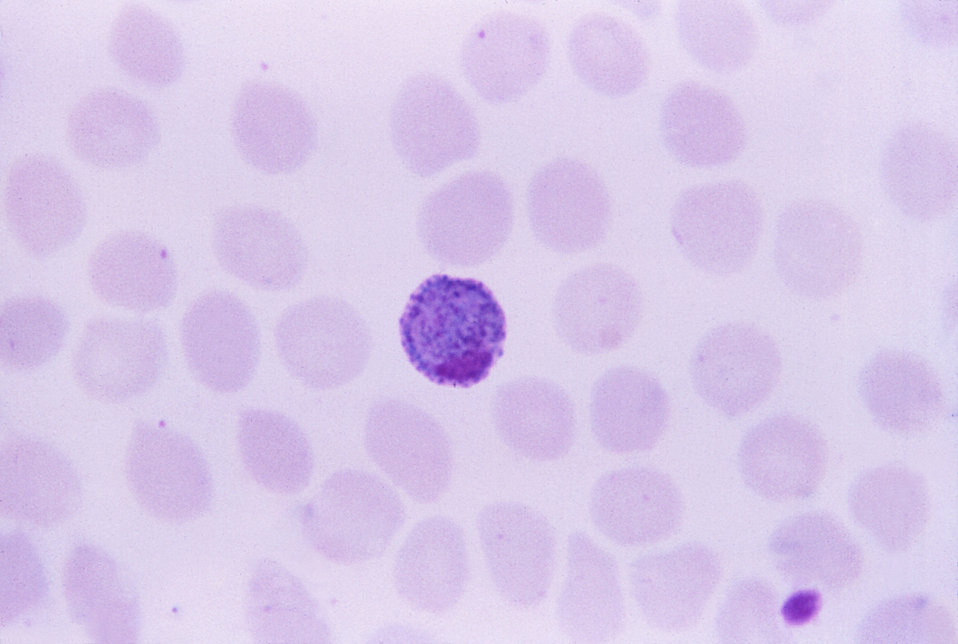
This thin film Giemsa stained micrograph depicts a Plasmodium ovale macrogametocyte.